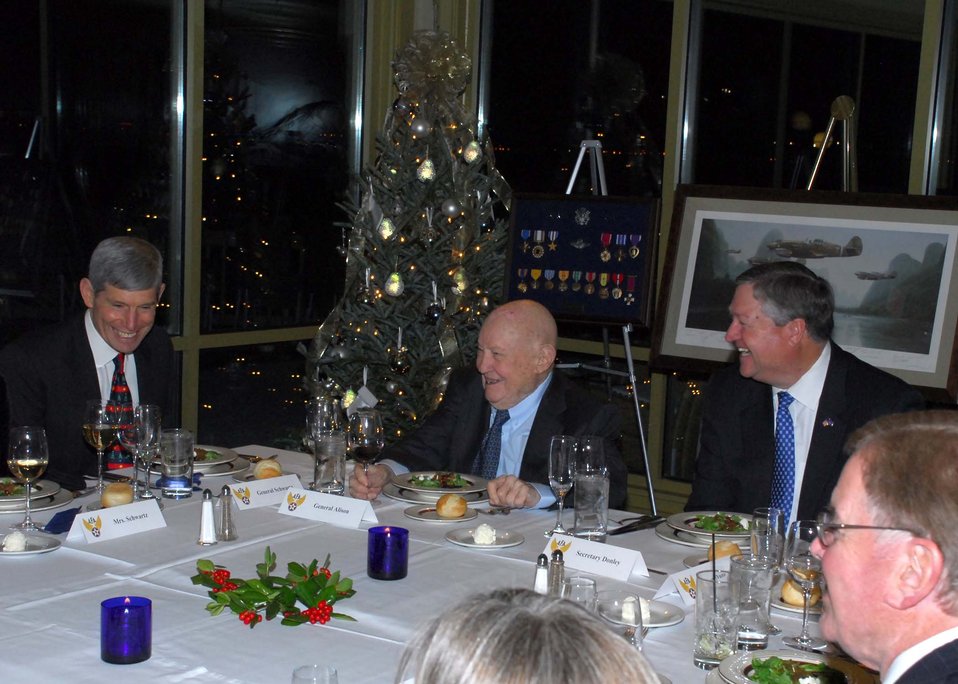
Maj Gen Alison birthday salute

Retired Air Force Maj. Gen. John R. Alison shares a laugh with Secretary of
the Air Force Michael Donley (right) and Air Force Chief of Staff Gen.
Norton Schwartz (left) during his 98th birthday salute Dec. 20, 2010, in
Alexandria, Va. The salute was sponsored by the Air Force Association.
General Alison is a highly decorated World War II combat ace and Korean War
veteran. He had seven confirmed and numerous probable kills while flying
with, and commanding, the 75th Fighter Squadron